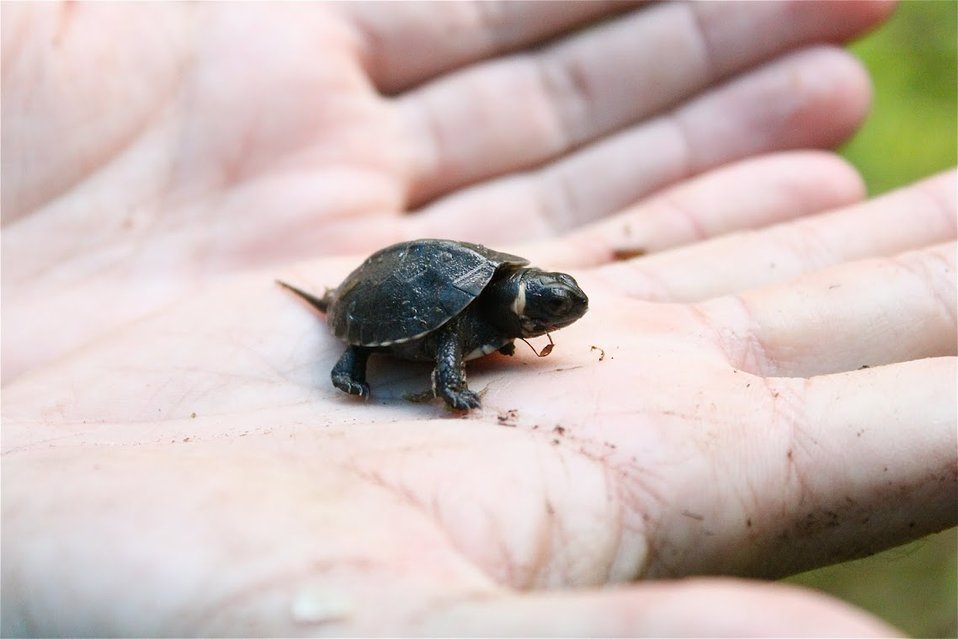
Bog turtle

Scientific name: Clemmys muhlenbergii
Status: Threatened and Similarity of appearance

Newly hatched bog turtle.